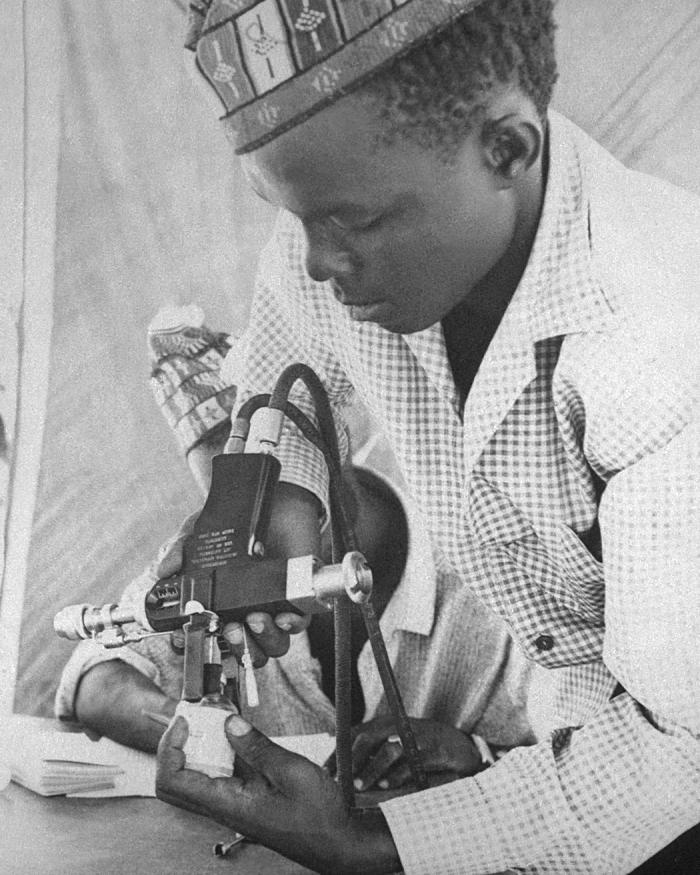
This healthcare worker is seen loading a Ped-O-Jet� during Nigeria's 1968 Smallpox Eradication Program.